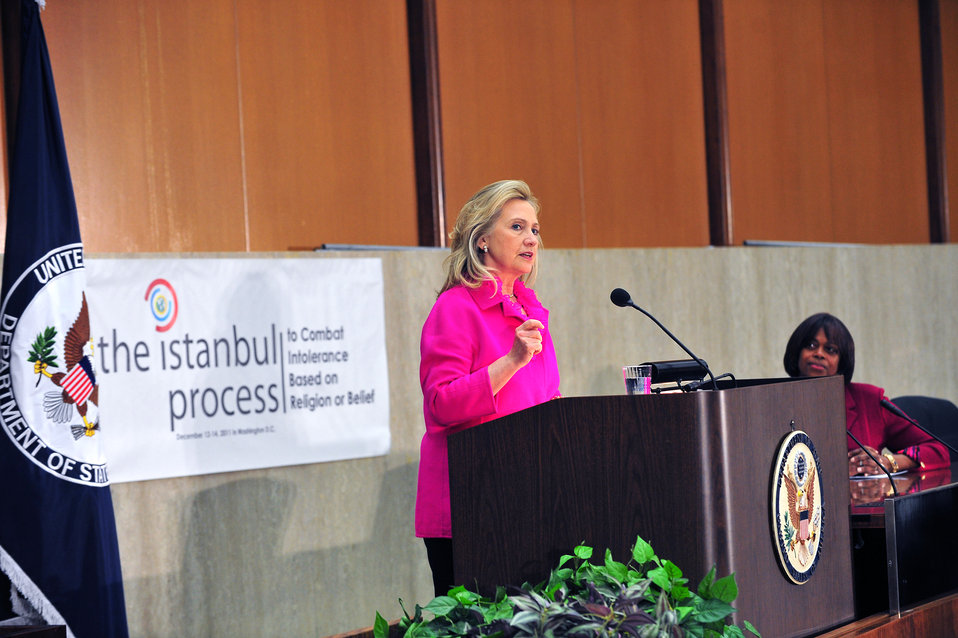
Secretary Clinton Address Istanbul Process for Combating Intolerance and Discrimination Based on Religion or Belief

U.S. Secretary of State Hillary Rodham Clinton addresses the Istanbul Process for Combating Intolerance and Discrimination Based on Religion or Belief, at the U.S. Department of State in Washington, D.C., on December 14, 2011.